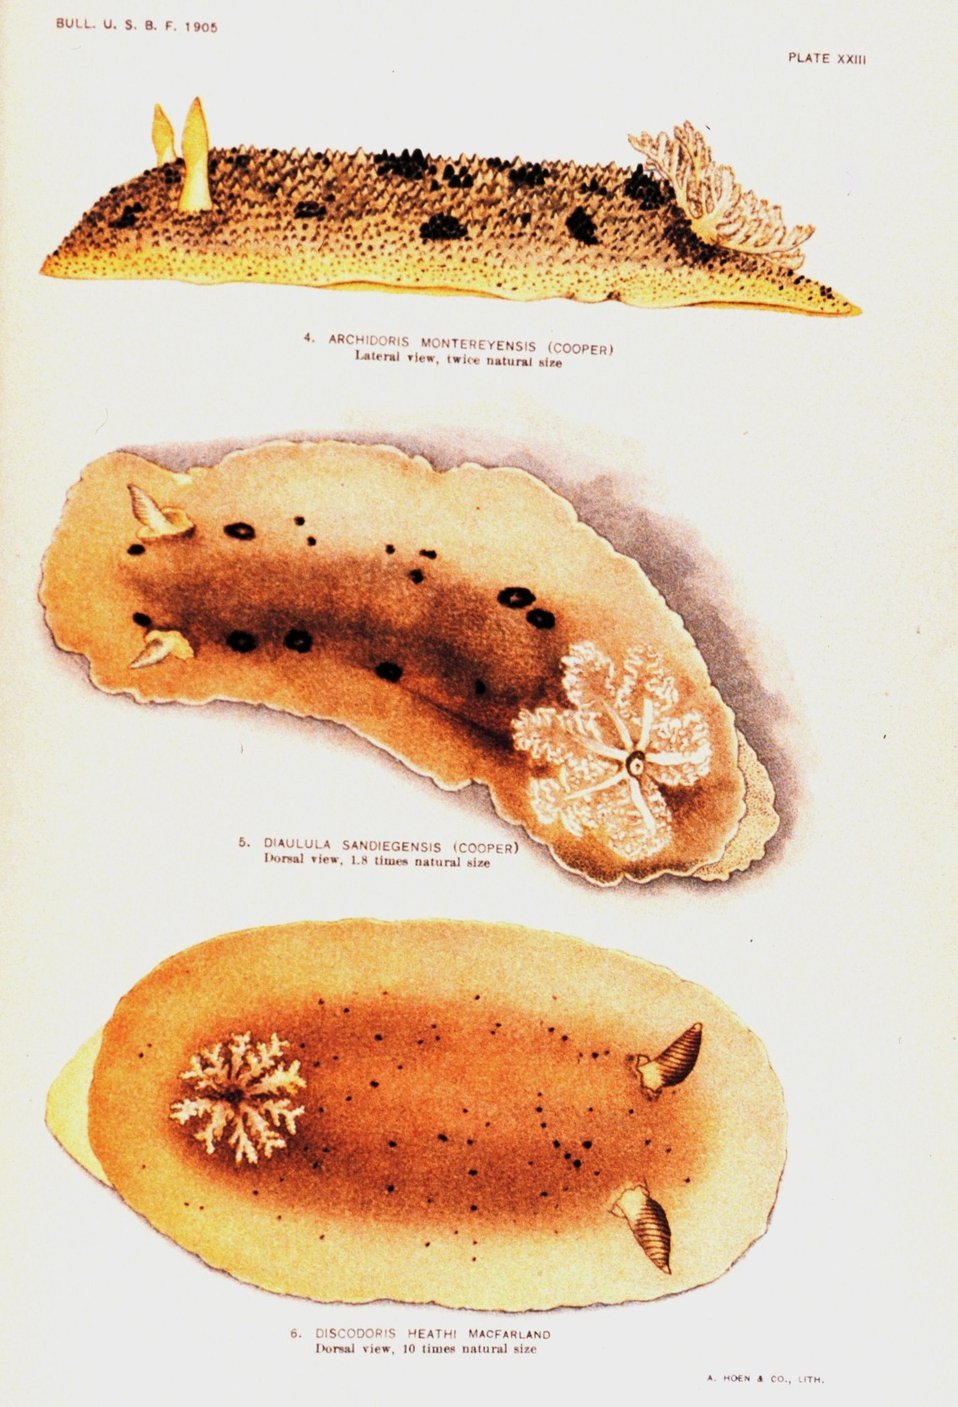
Nudibranchs. 4. Archidoris montereyensis (Cooper) - Lateral view. 5. Diaulula sandiegensis (Cooper) - Dorsal view. 6. Discodoris heathi MacFarland - Dorsal view. 4 painted by Olive H. MacFarland; 5, 6 painted by Anna B. Nash. In: 'Opisthobranchiate Mollusca from Monterey Bay ....', Bulletin of the Bureau of Fisheries, Volume 25, 1905. P. 151, Plate XXIII.